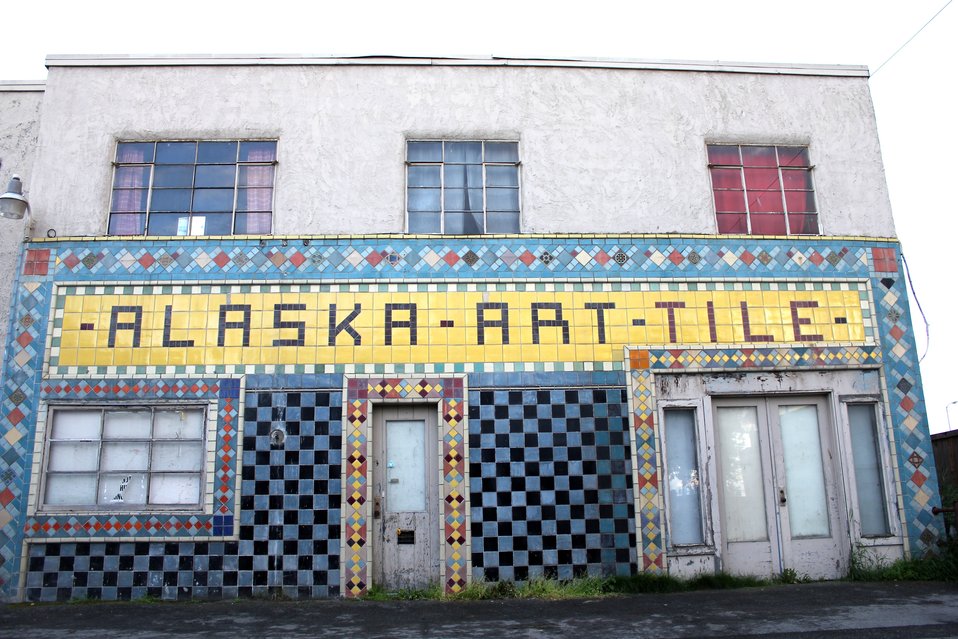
Alaska Art Tile. Now it is a private apartment but it is a remnant of old Anchorage which disappeared after the 1964 earthquake.